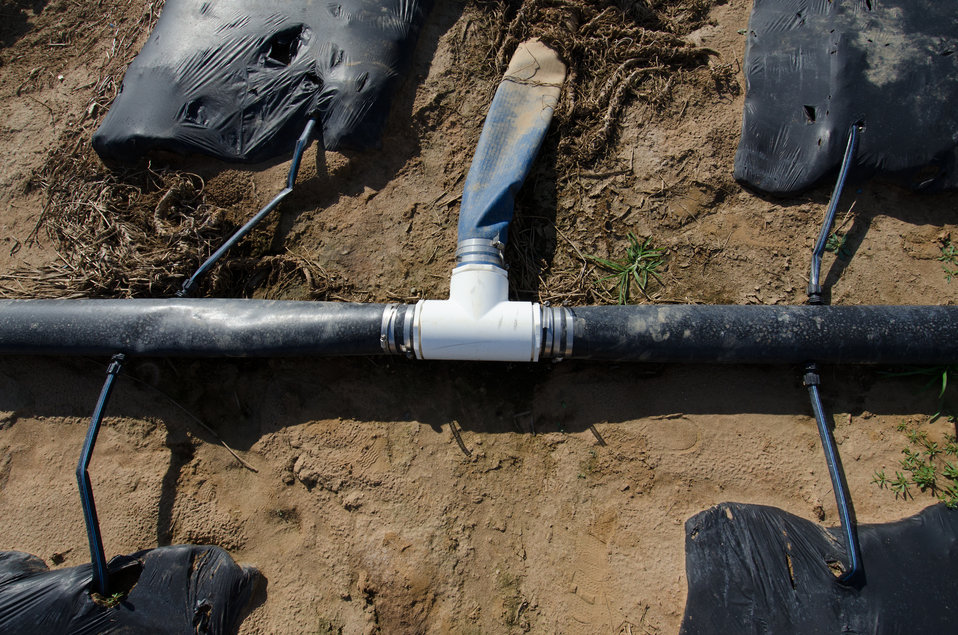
Kirby Farms third-generation family farm in Mechanicsville, VA, uses micro irrigation (drip watering) and plastic mulch (row covering) to efficiently grow green zucchini squash, on Friday, Sept 20, 2013. Water is pumped through a filtration/regulator system to flexible distribution pipes and hard connectors. Emitter hoses can be driven in where needed. Pressurized hoses emit water at a very slow rate near the base of the plants. Computers or timers provide additional controls. A micro irrigation system, also known as drip or trickle irrigation, is used to water directly to the plant root zone utilizing surface or subsurface applicators. For more information please see www.nrcs.usda.gov/Internet/FSE DOCUMENTS/nrcs141p2 024038...
Plastic sheeting is a form of mulch. It conserves soil moisture and reduces energy
use associated with irrigation, moderates soil temperature, provide erosion control, suppresses weed growth, facilitates the establishment of vegetative cover, improves soil quality, and reduces airborne particulates.